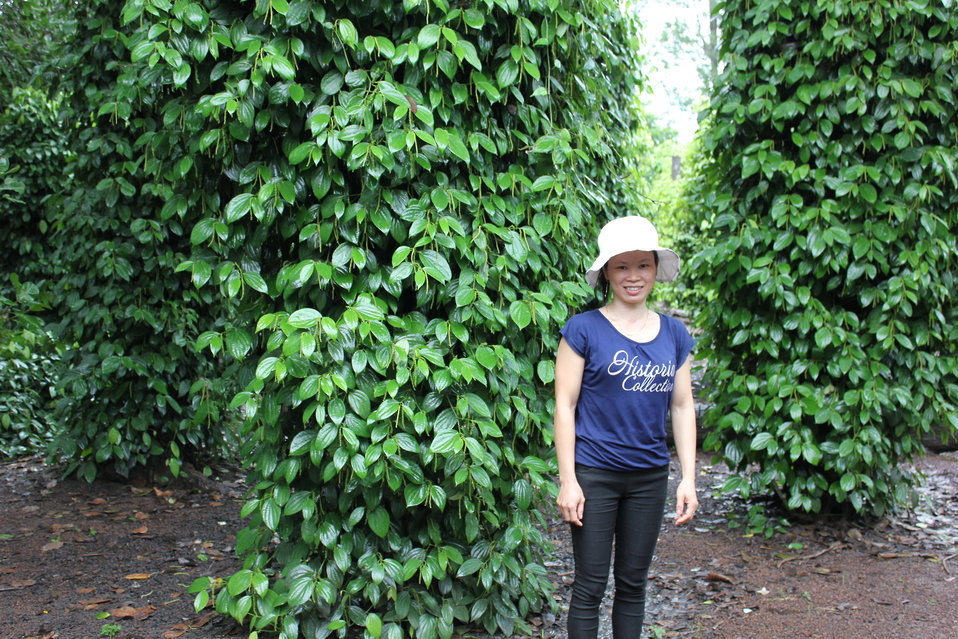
USAID supports cocoa cultivation in central Vietnam

Buon Don District, Dak Lak Province. August 6, 2013.